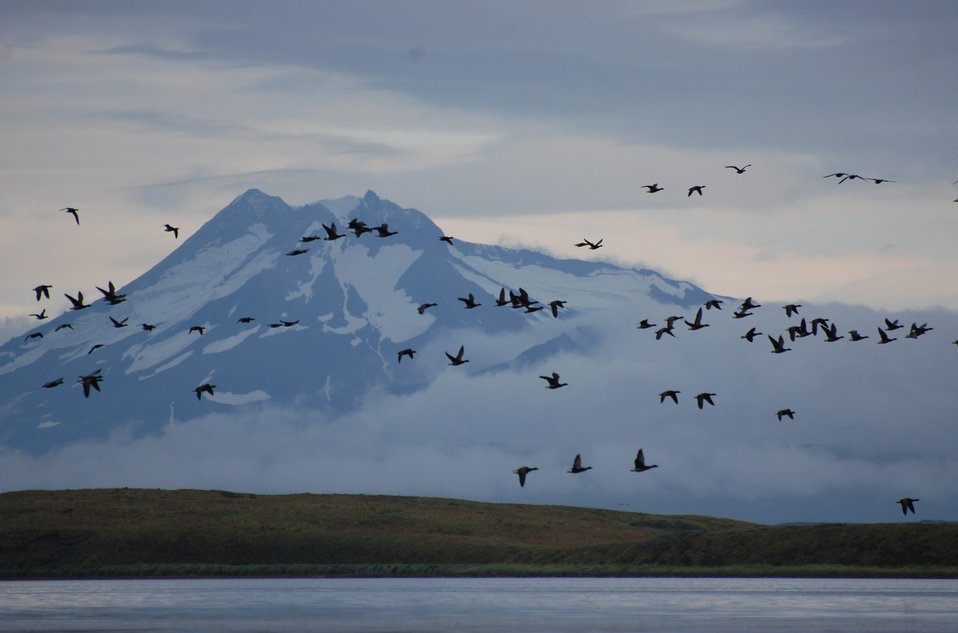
Brant flyby

Brant fly by Mount Dutton, Izembek National Wildlife Refuge